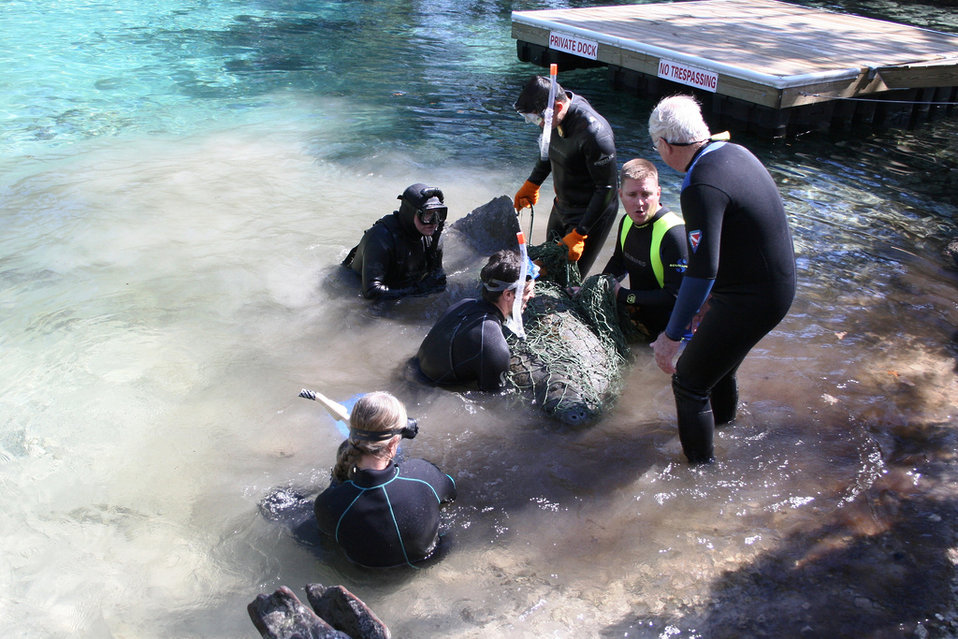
Endangered Florida manatee (Trichechus manatus), Crystal River National Wildlife Refuge

Photo credit: Tracy Colson

The Crystal River National Wildlife Refuge, was established in 1983 specifically for the protection of the endangered West Indian Manatee. This unique refuge preserves the last unspoiled and undeveloped habitat in Kings Bay, which forms the headwaters of the Crystal River. The refuge preserves the warm water spring havens, which provide critical habitat for the manatee populations that migrate here each winter.